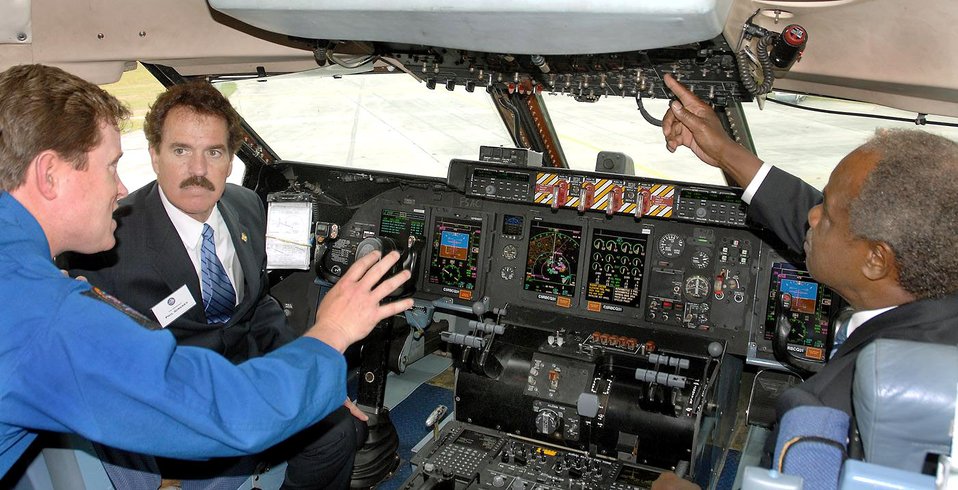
Improved C-5 promises more faithful years of service

Attendees at the roll-out ceremony for the modernized C-5M receive a hands-on experience with the aircraft's modern cockpit. The ceremony was held May 17, 2006, at the Lockheed Martin facility in Marietta, Ga.